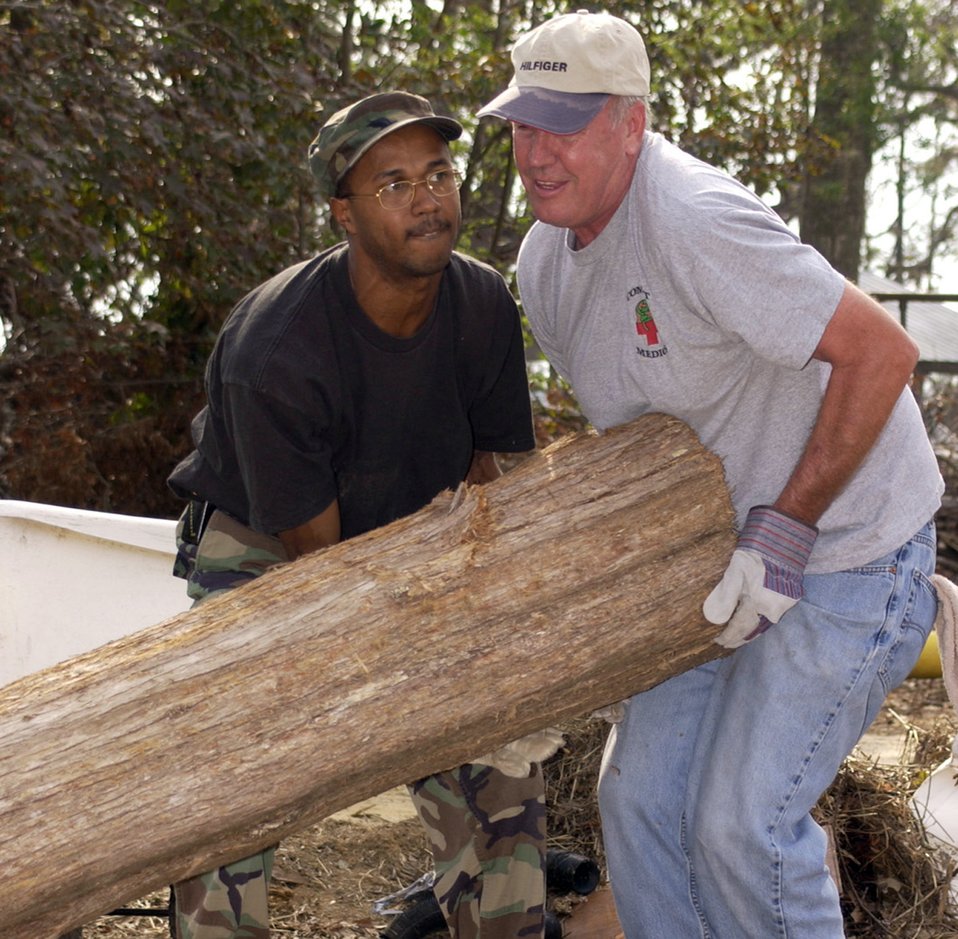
Hurricane relief efforts

BILOXI, Miss. (AFPN) -- Staff Sgt. Frederick Braxton (left) and Col. Wade Jenkins move a cedar log while clearing storm debris at Camp Wilkes. The Boy Scouts' camp sustained extensive damage from Hurricane Katrina. Sergeant Braxton is with the 338th Training Squadron and Colonel Jenkins is with the 81st Medical Group.